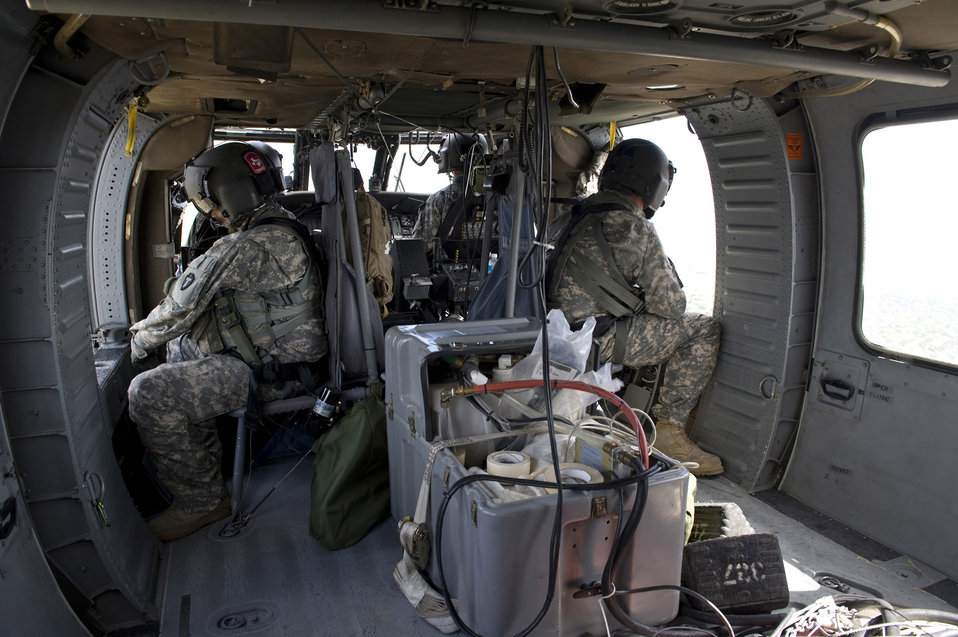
Air Guard flight crews undergo water survival training

U. S. Army Sgts. Teddy Cole, crew chief, (right) and Kenneth Jarrett, flight medic, watch for hazards during a flight to provide air support for refresher aircrew water survival training. Both are assigned to the Texas Army National Guard's 149th Aviation Regiment in San Antonio.